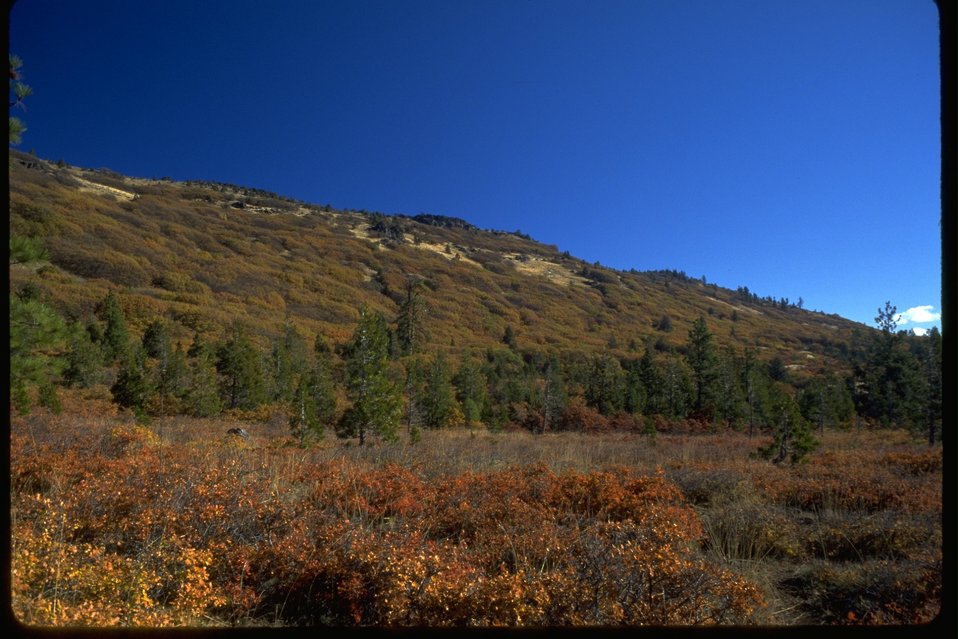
The southside bench of the Keene Creek Ridge.